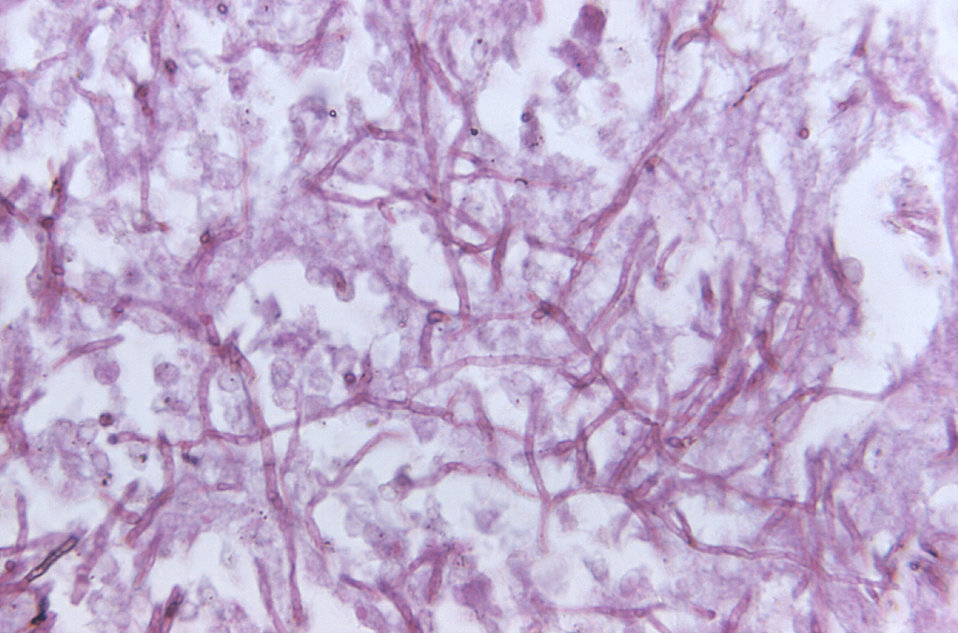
Note the histopathologic changes in a case of phaeohyphomycosis due to E. pisciphilus in this catfish tissue specimen.